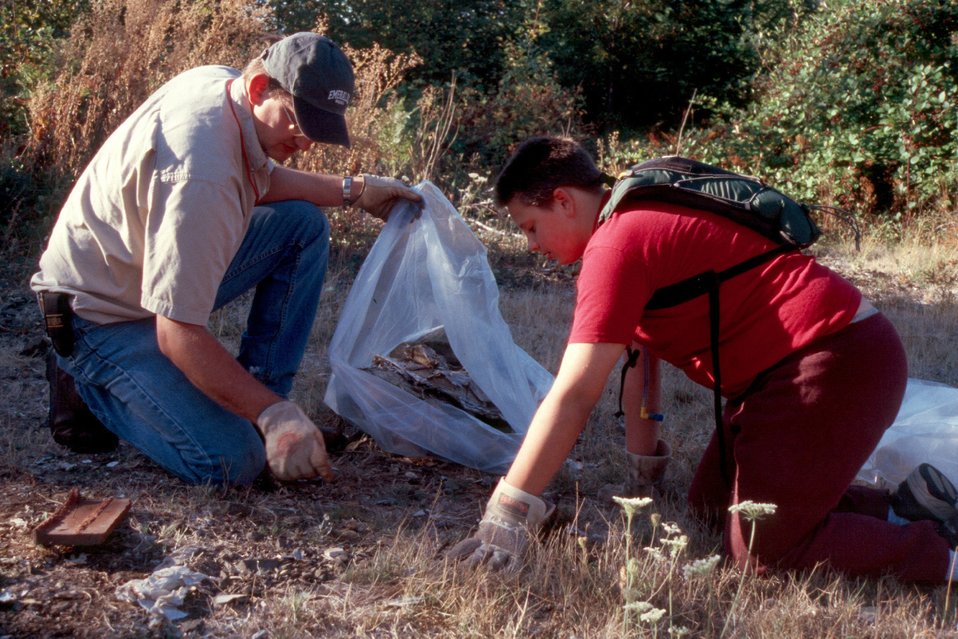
Loron Robertson and Anthony Elkins from Troupe #106, helps clean up BLM lands